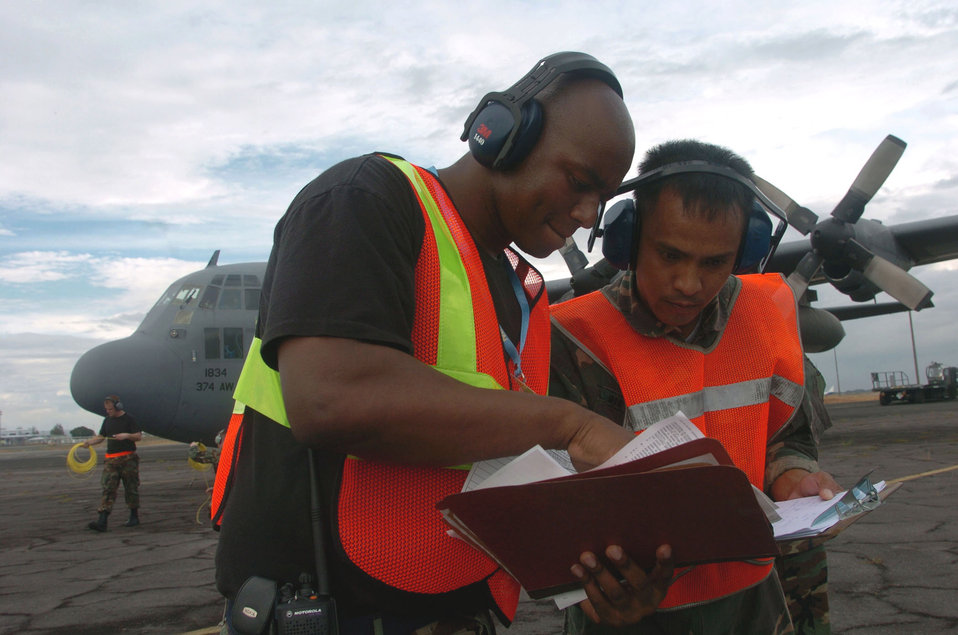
Airmen arrive for Balikatan 2004

CLARK AIRFIELD, Philippines -- Tech. Sgt. Robert Borden (left) and Philippine air force Staff Sgt. Danilo Cano check their cargo manifest lists here during exercise Balikatan 2004. Sergeant Borden is a tanker airlift control element airman from Contingency Readiness Group's Detachment 613 at Yokota Air Base, Japan. More than 100 airmen and four C-130 Hercules aircraft from Yokota are participating in joint training with Philippine military forces. Exercise Balikatan helps improve combined planning, combat readiness and interoperability between U.S. and Philippine armed forces. About 2,500 U.S. troops and 2,300 Philippine forces will take part in the exercise.